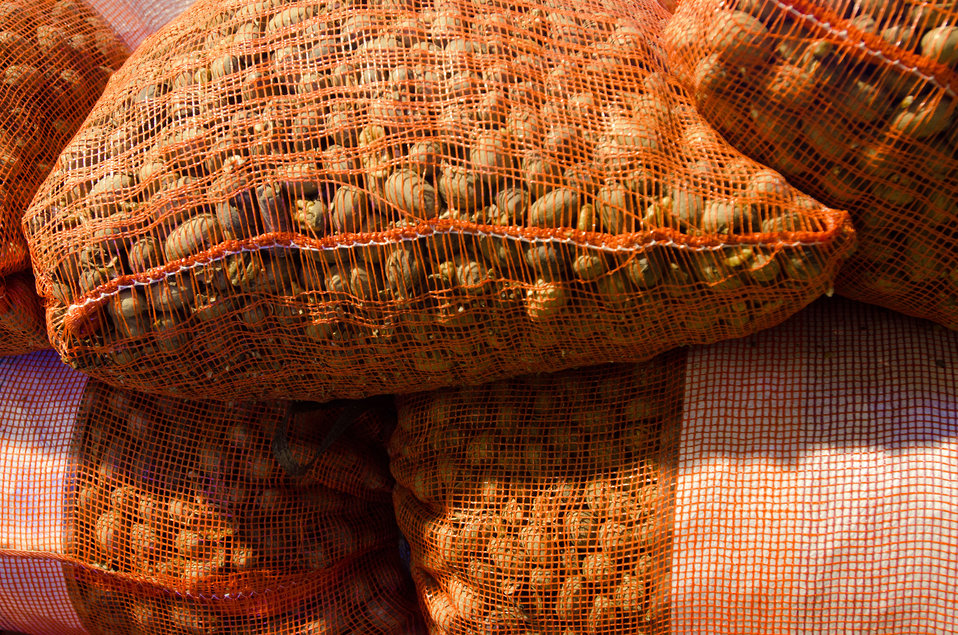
Five and 50 pound bags of pecans produced at Arrowhead Farms of Crystal City, TX, on Friday, December 9, 2011, owned by Mr. Akram Mohammad, a pecan farmer since 2005. The 719 acre farm with 10,000 trees, features some orchards with underground micro irrigation system that feeds water to the roots of 4,380 pecan trees on 146 acres. Mr. Mohammad said, “USDA (U.S. Department of Agriculture) was essential to my business and trees surviving the recent exceptional drought. The trees were stress free thanks to underground micro-irrigation. This is essential to the future growth of Texas agriculture and good for America.” U.S. Department of Agriculture’s (USDA) Environmental Quality Initiative Program (EQIP) awarded Mr. Mohammad a $130,000 grant in 2008. He provided $26,000 for the balance of the $156,000 total cost to install a 146-acre underground micro-irrigation for 4,380 trees.